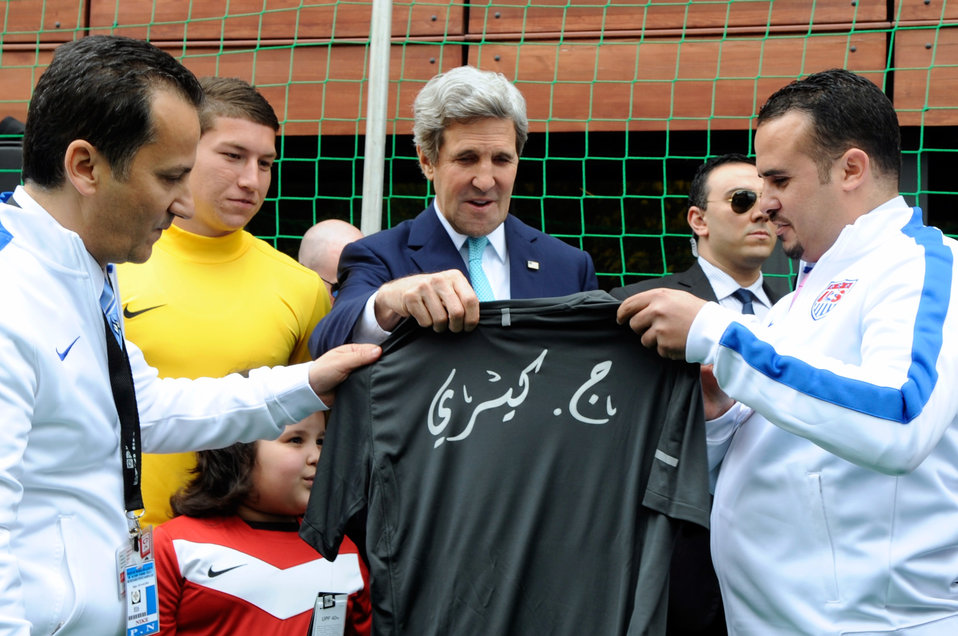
Secretary Kerry Signs Team U.S.A. World Cup Jersey During Sports Diplomacy Event in Algiers

U.S. Secretary of State John Kerry signs a Team USA World Cup jersey presented to him by executives after speaking about State Department Sports Diplomacy programs during a visit to a shoemaker's flagship store in Algiers, Algeria.